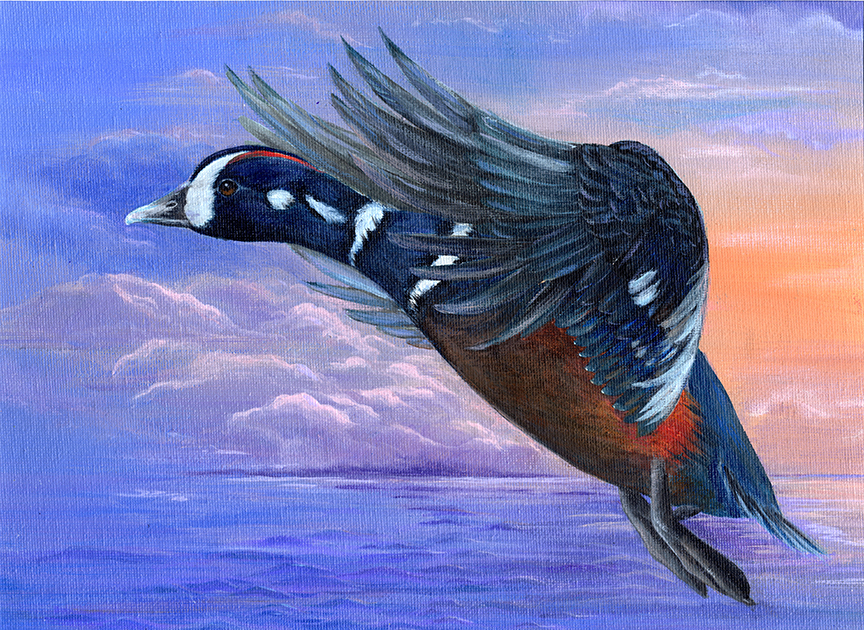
JRDuck2013WA

2013 Junior Duck Stamp Best of Show-Washington State